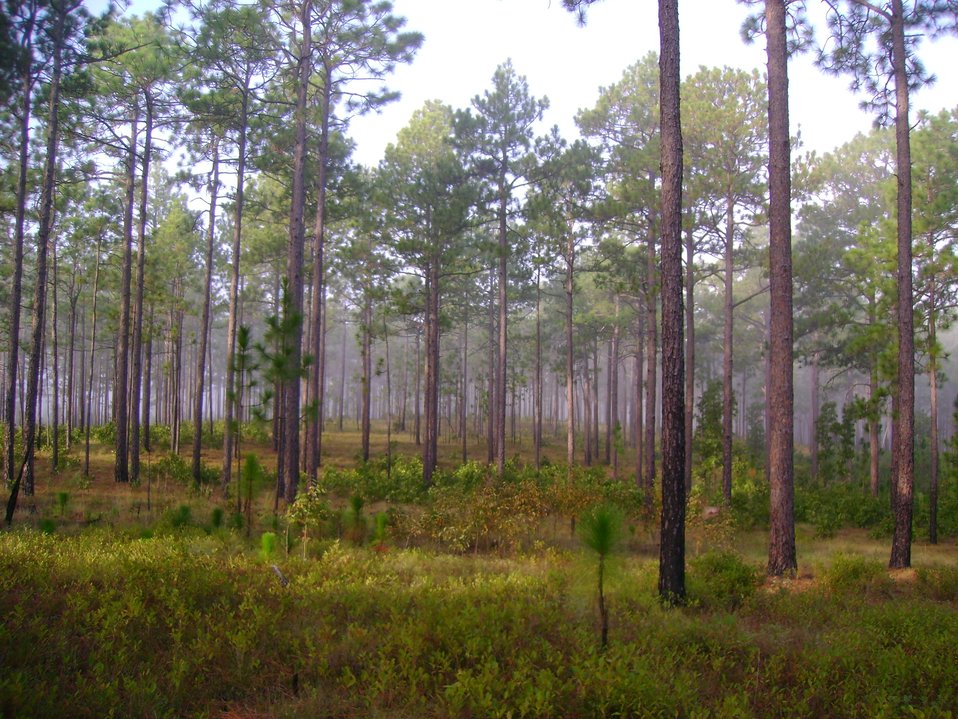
SC Mature open stand of longleaf pines, carolina Sandhills Nwr